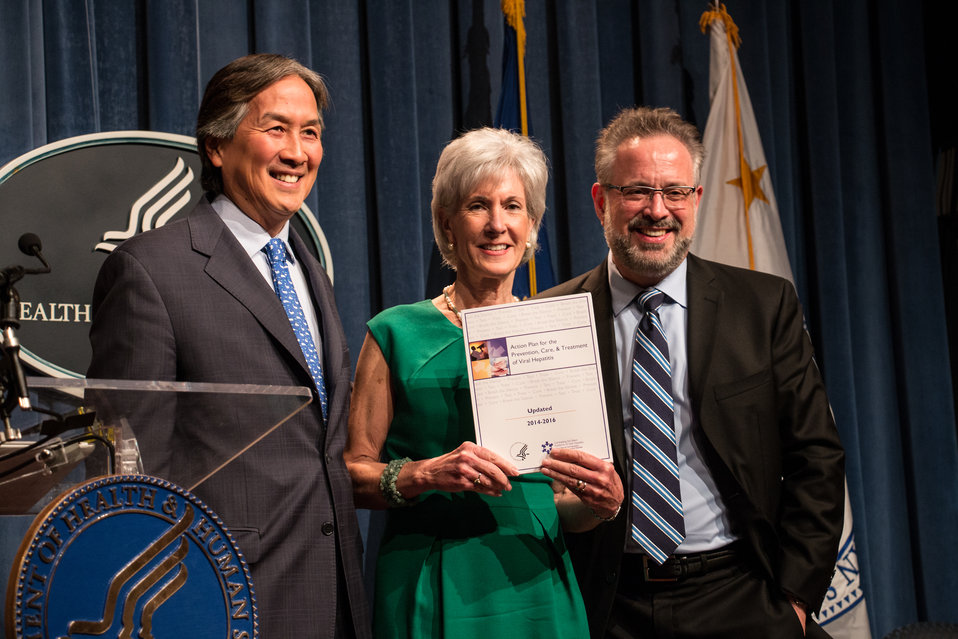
VHAP Launch (200 of 511)